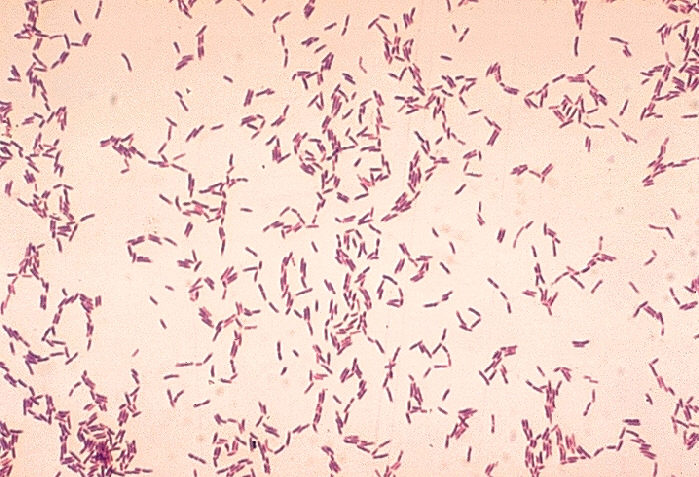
Actinomyces viscosus. Gram stain.